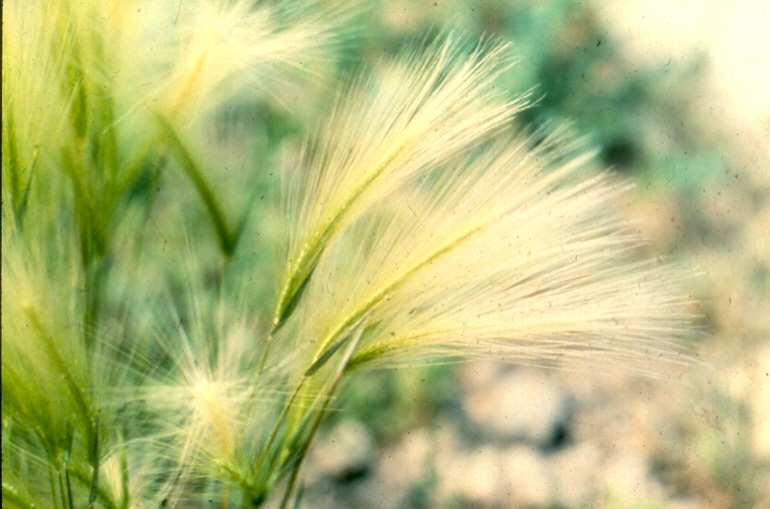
Foxtail Barley Salmon FIeld Office UCSC Upper Columbia Salmon Clearwater District